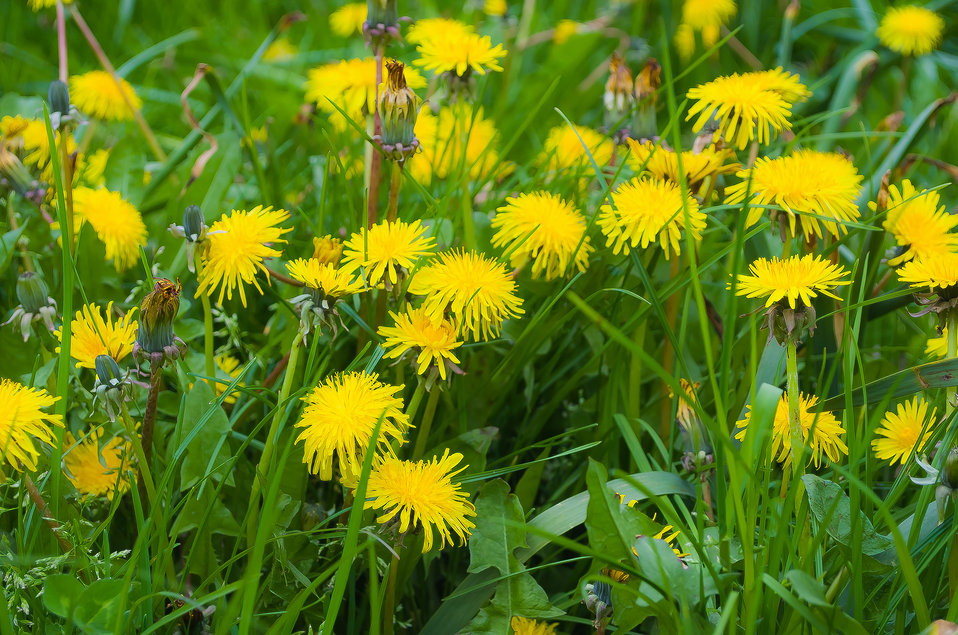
Dandelions.